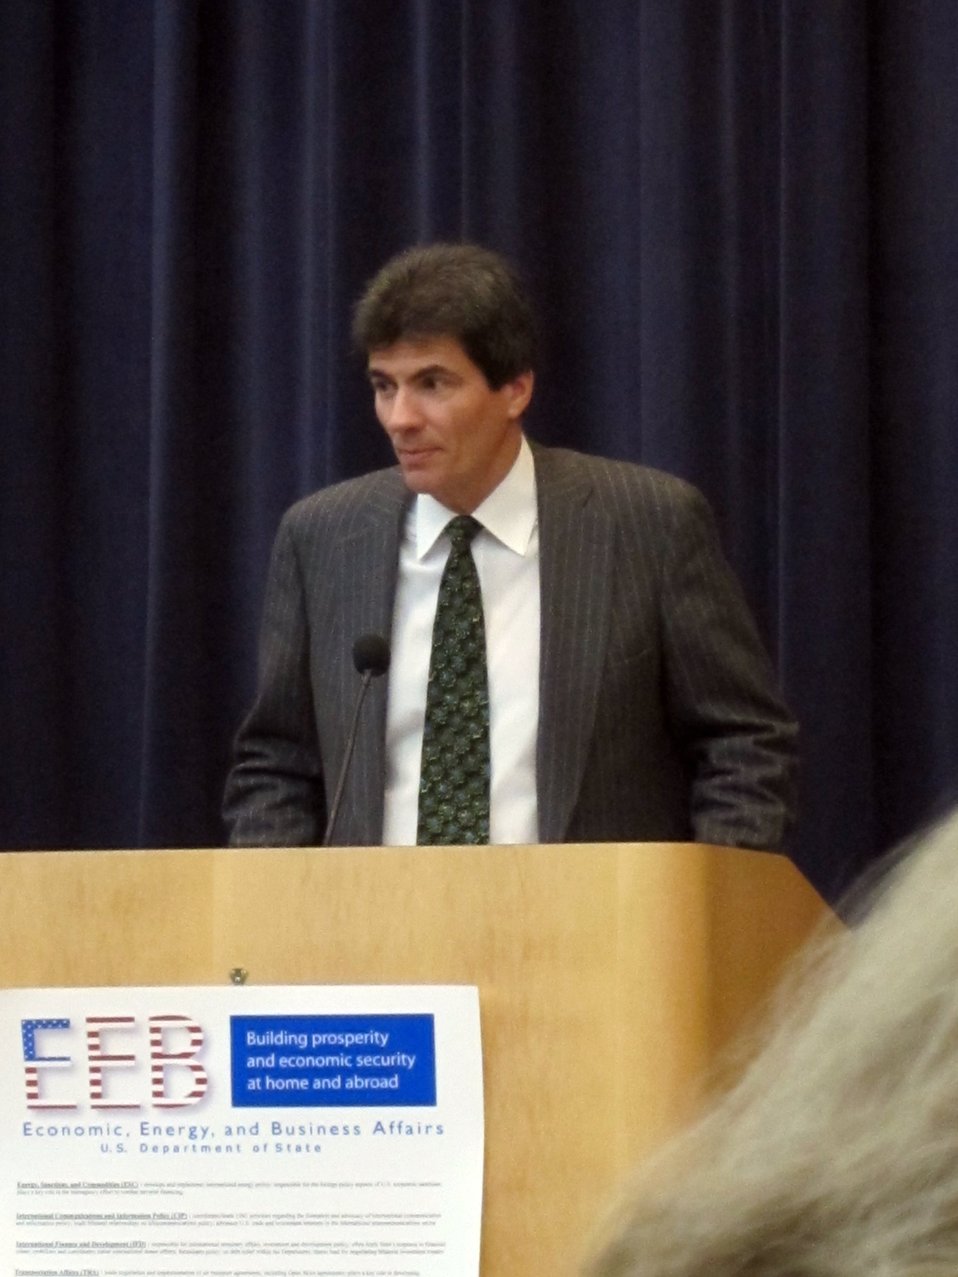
Assistant Secretary Fernandez Delivers Remarks at the Economic Leadership Day Ceremony

Assistant Secretary of State for Energy, Economic and Business Affairs Jose Fernandez delivers remarks at the Economic Leadership Day Ceremony, at the U.S. Department of State in Washington, D.C., on March 29, 2011.